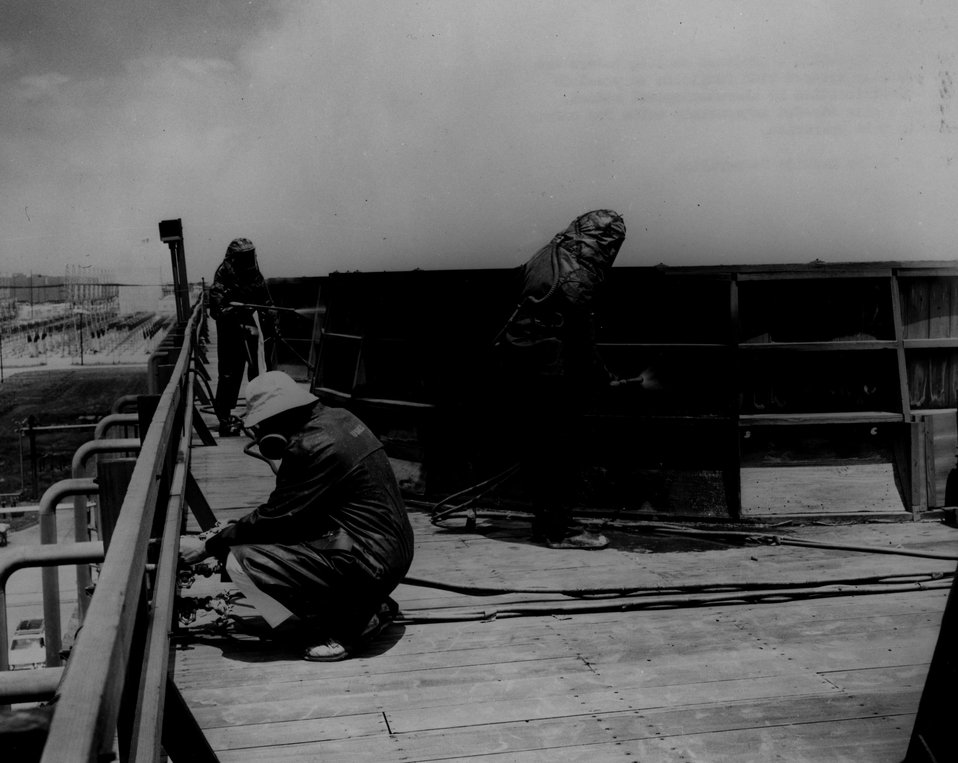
Redwood cooling towers are periodically sprayed with fungicide to preclude wood deterioration by microbiological attack. c. 1967